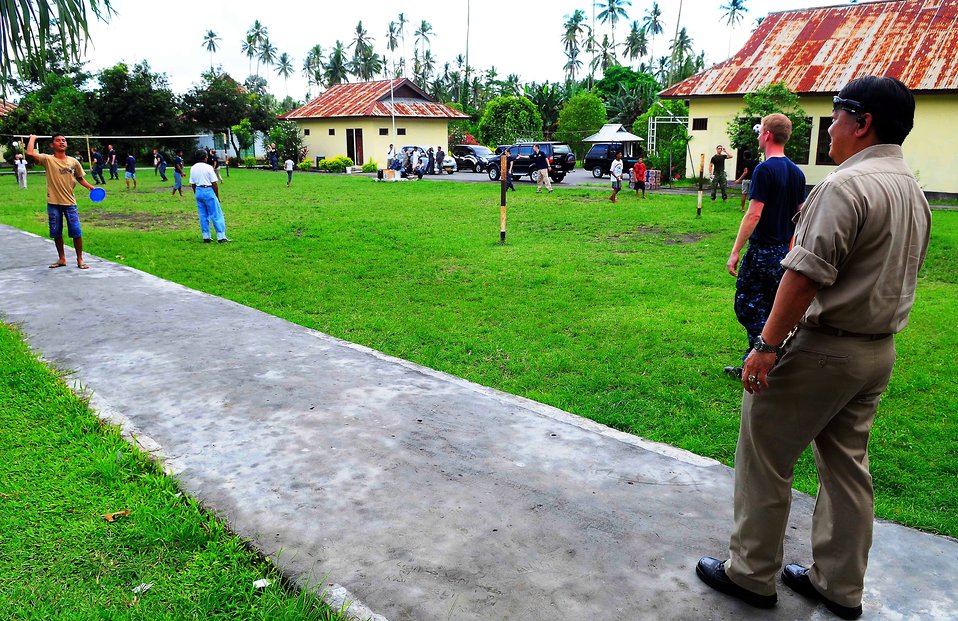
Master Chief Culinary Specialist (SW/AW) Jack Fong Plays Catch With an Indonesian Boy

Master Chief Culinary Specialist (SW/AW) Jack Fong, currently embarked aboard the Military Sealift Command hospital ship USNS Mercy (T-AH 19), plays catch with a boy during a community service event at the Rumah Sejahtera Bagi Anak Orphanage, in support of Pacific Partnership 2010 in Tobelo, Indonesia, on July 14, 2010. Pacific Partnership 2010 is the fifth in a series of annual U.S. Pacific Fleet endeavors conducted in Indonesia as a disaster relief exercise to strengthen regional partnerships.